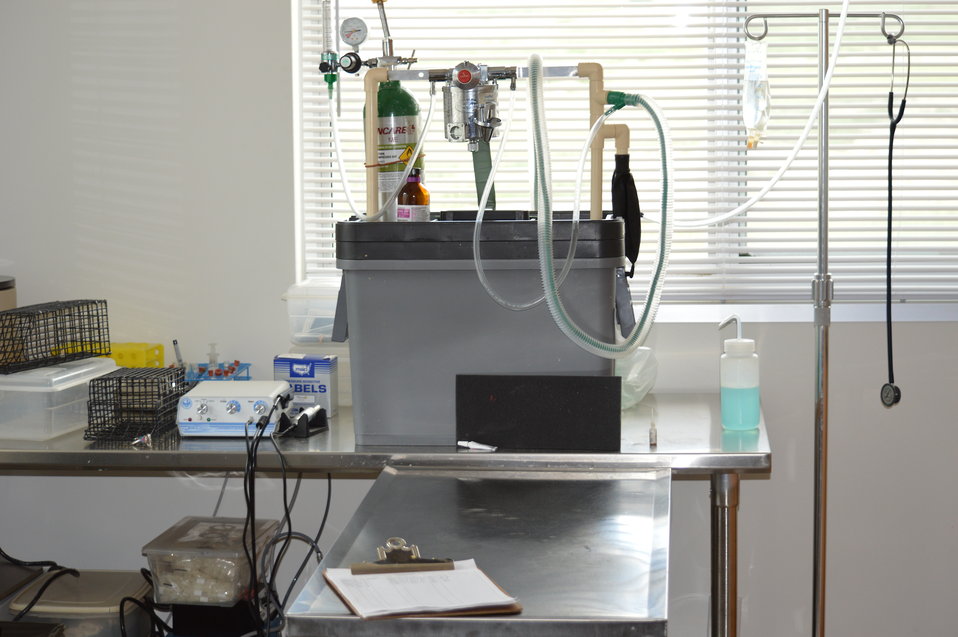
Interns visit the NBFFCC

The surgery room. In the summer of 2012, USFWS Region 6 interns visited the National Black-footed Ferret Conservation Center (NBFFCC) in Colorado to learn how the program reintroduces the endangered Black-footed ferret back into its native habitat.